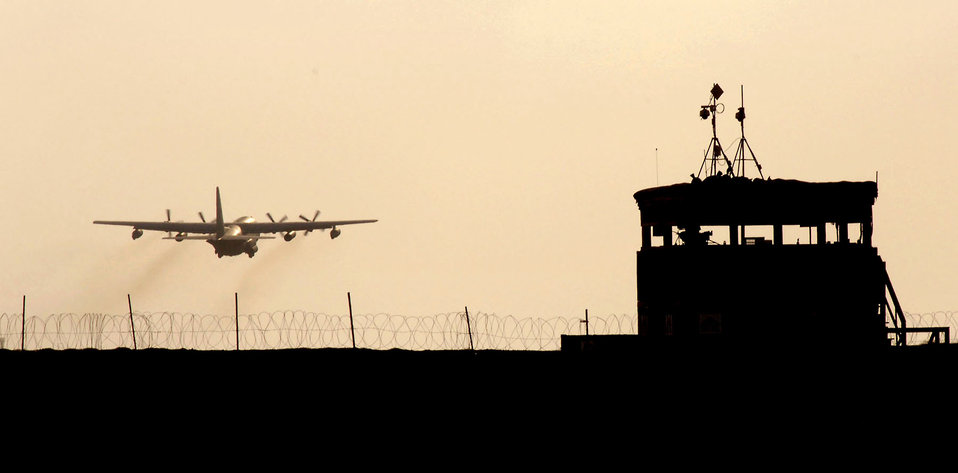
Maintainers keep C-130s flying in Djibouti

An HC-130P takes off from Camp Lemonier on its way down range in support of the Combined Joint Task Force - Horn of Africa mission April 4. CJTF - HOA is a unit of United States Central Command. The organization's mission is to prevent conflict, promote regional stability and protect coalition interests in order to prevail against extremism. More than 1,500 people from each branch of the military, civilian employees, coalition forces and partner nations make up the organization.